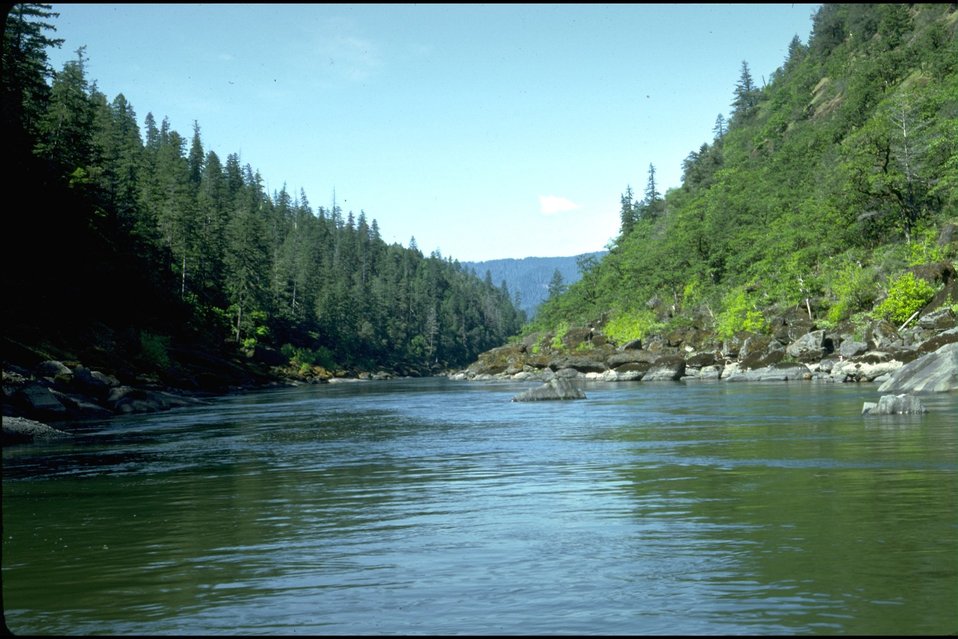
Rogue River - Scenic shot.